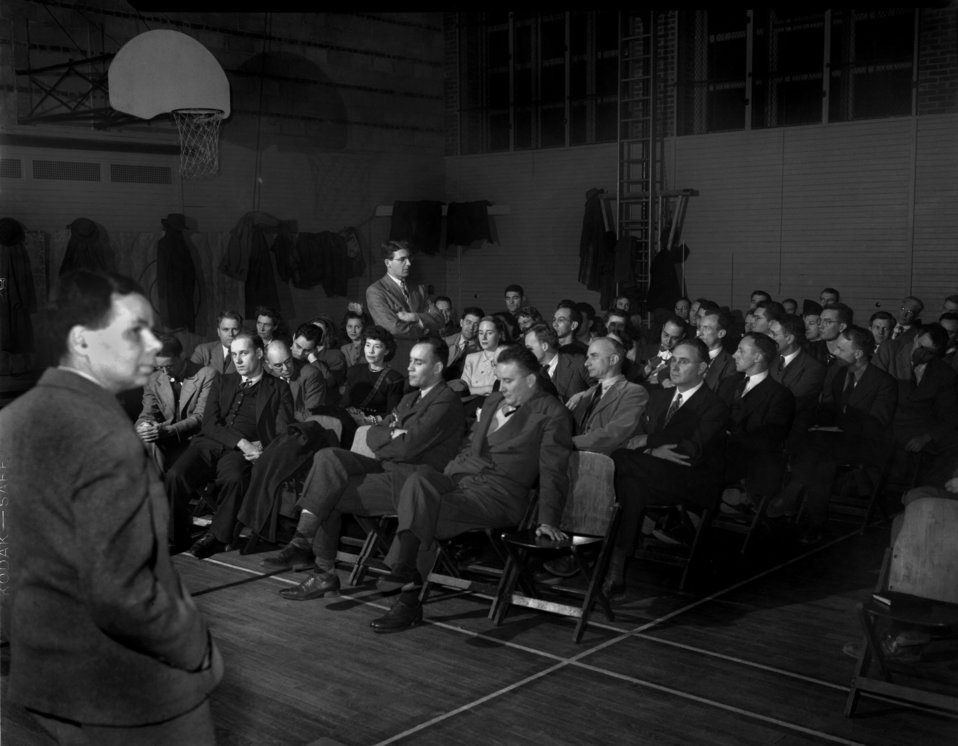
Atomic Engineers and Scientist Association Meeting Oak Ridge

3252-8c DOE photo Ed Westcott 1-14-1947 Oak Ridge Tennessee